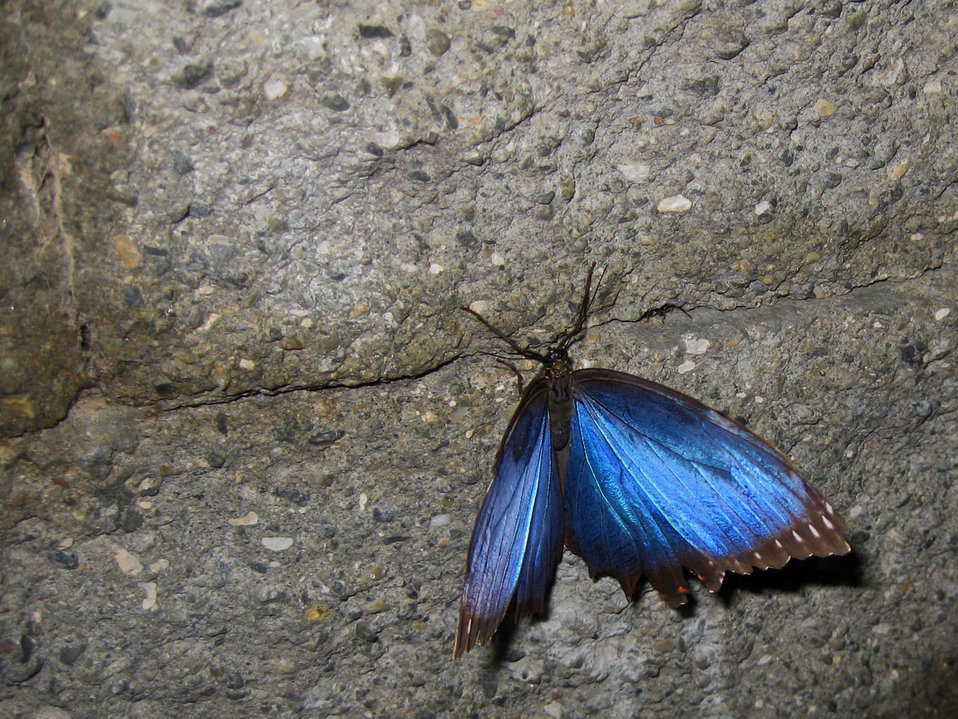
Blue morpho on wall

Blue morpho peleides on a stone wall.